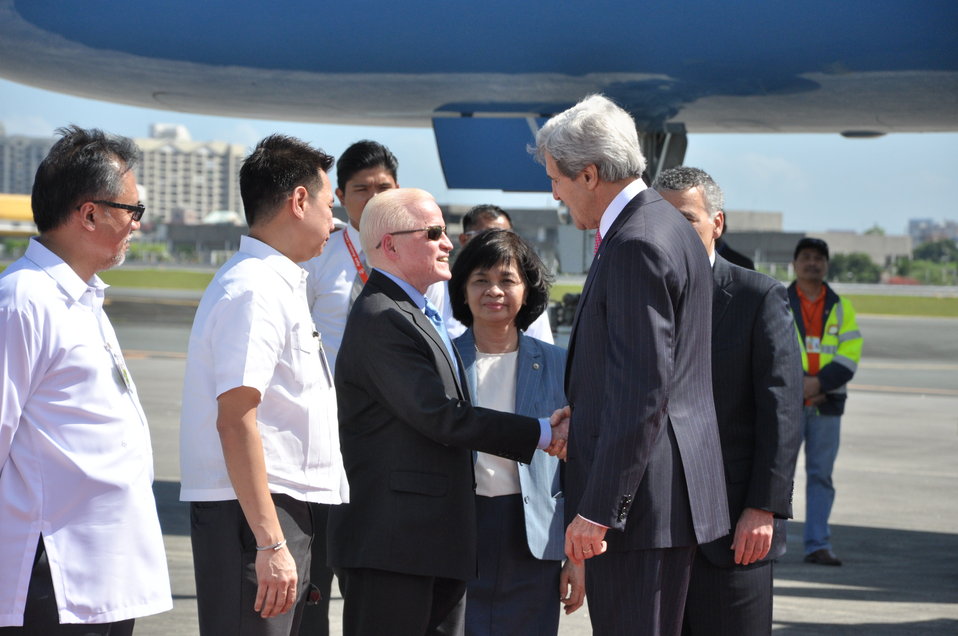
Philippine Ambassador Cuisia and Undersecretary Quiambao-Del Rosario Welcome Secretary Kerry to the Philippines

Philippine Ambassador to the U.S. Jose L. Cuisia and Philippine Undersecretary of Foreign Affairs in International Economic Relations Laura Quiambao-Del Rosario welcome Secretary Kerry to Manila for his first official visit to the Philippines as Secretary of State on December 17, 2013.